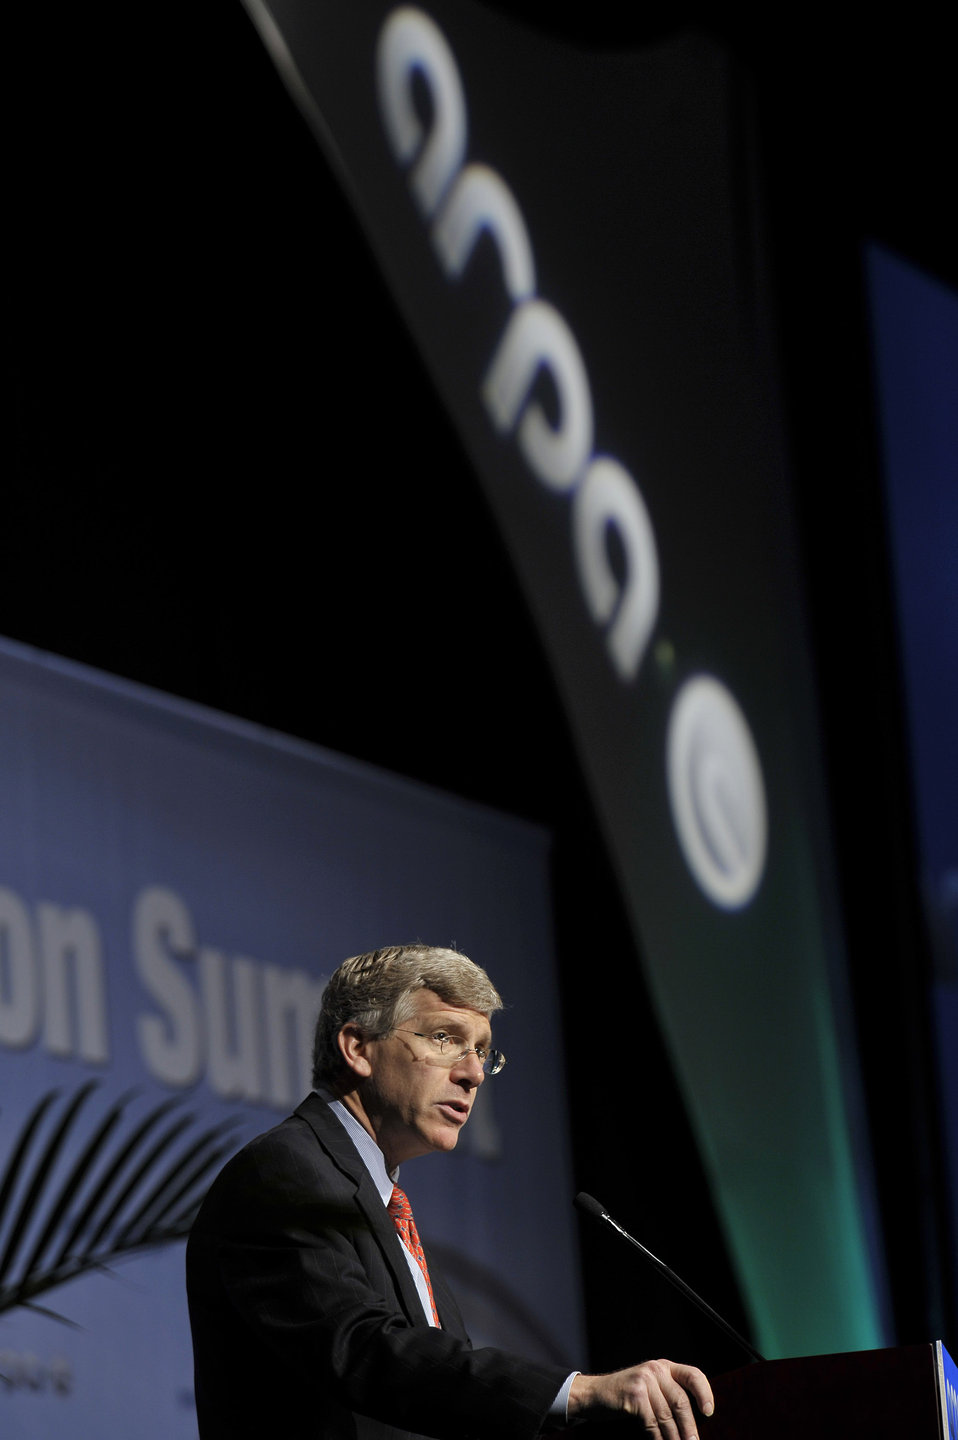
ARPA-E Energy Innovation Summit 2011, 77 of 83

Daniel Poneman, Deputy Secretary, US Department of Energy.